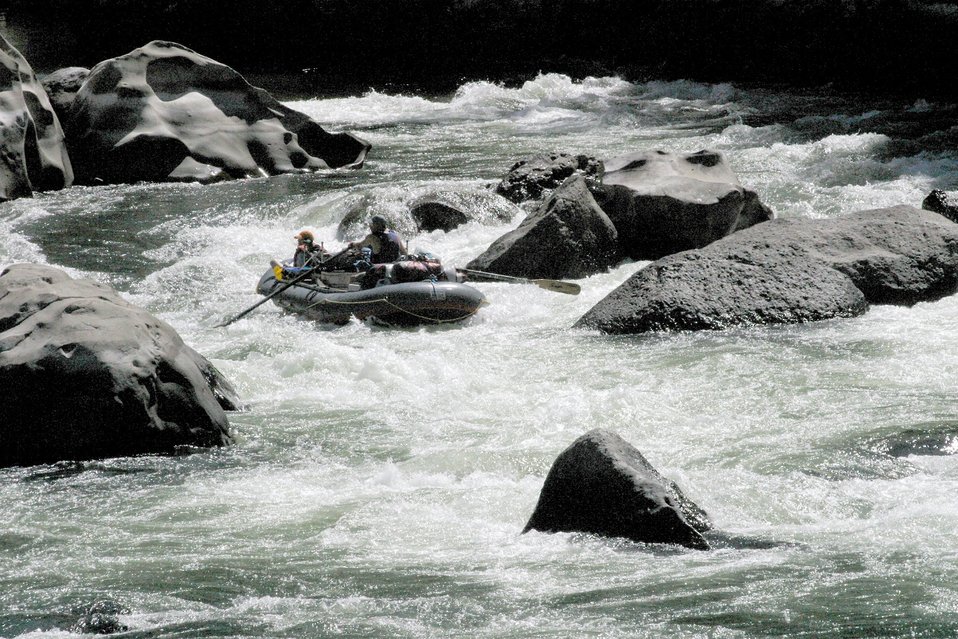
Boaters negotiate Blossom Rapids.